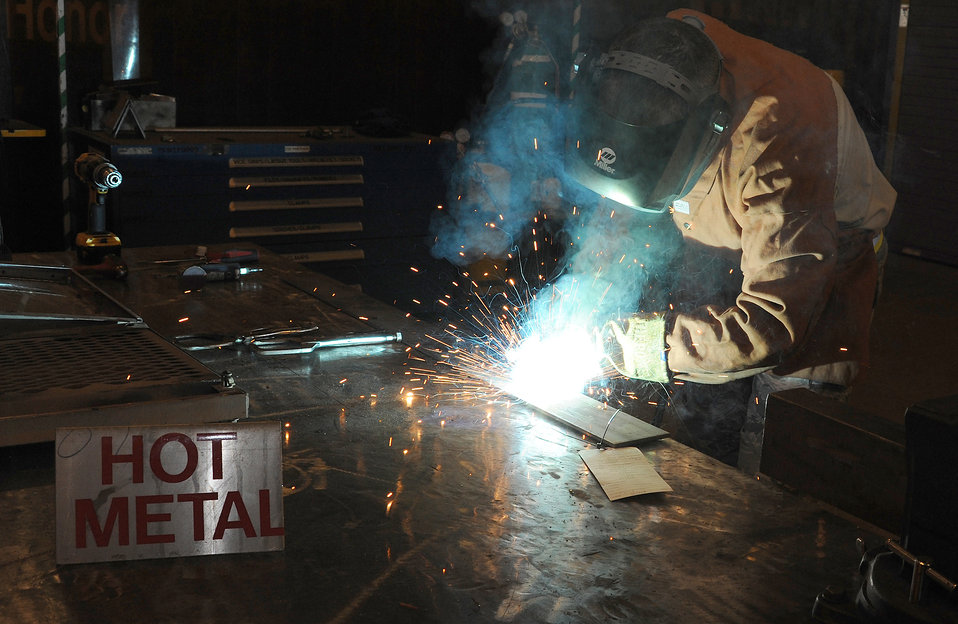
Sparks are flying

Staff Sgt. Keith Oxford welds aerospace ground equipment April 18, 2011, at an air base in Southwest Asia. Sergeant Oxford is a metals technology journeyman assigned to the 379th Expeditionary Maintenance Squadron.